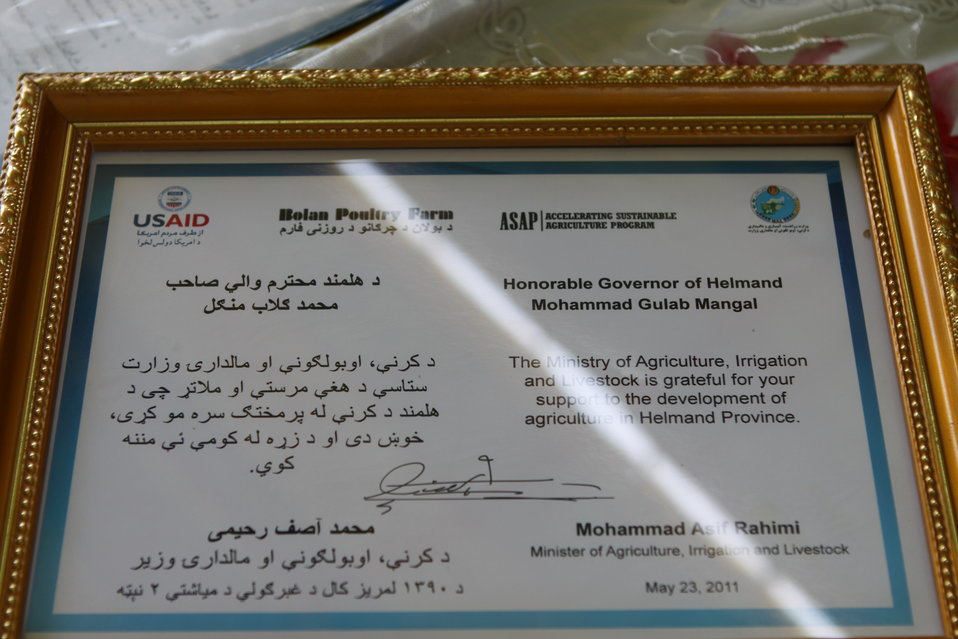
Bolan Poultry Farm